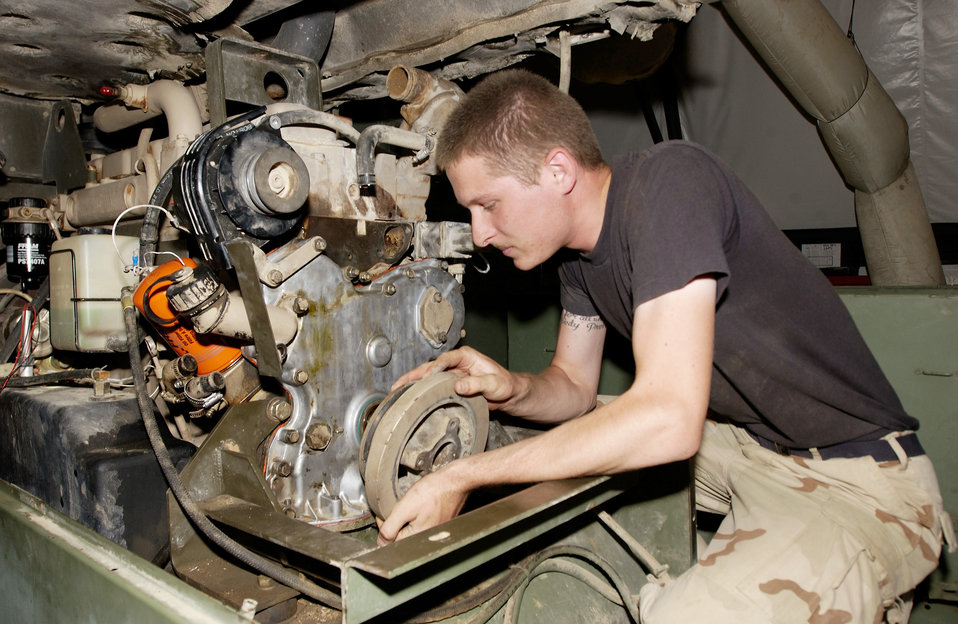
Controlling the sky

KIRKUK AIR BASE, Iraq -- Airman 1st Class Nolan Johnsen replaces a harmonic balancer on a generator. He is assigned to the 727th Expeditionary Air Control Squadron Detachment 1 here. The detachment's Airmen provide commanders and pilots with a real-time view of northern Iraq's airspace.